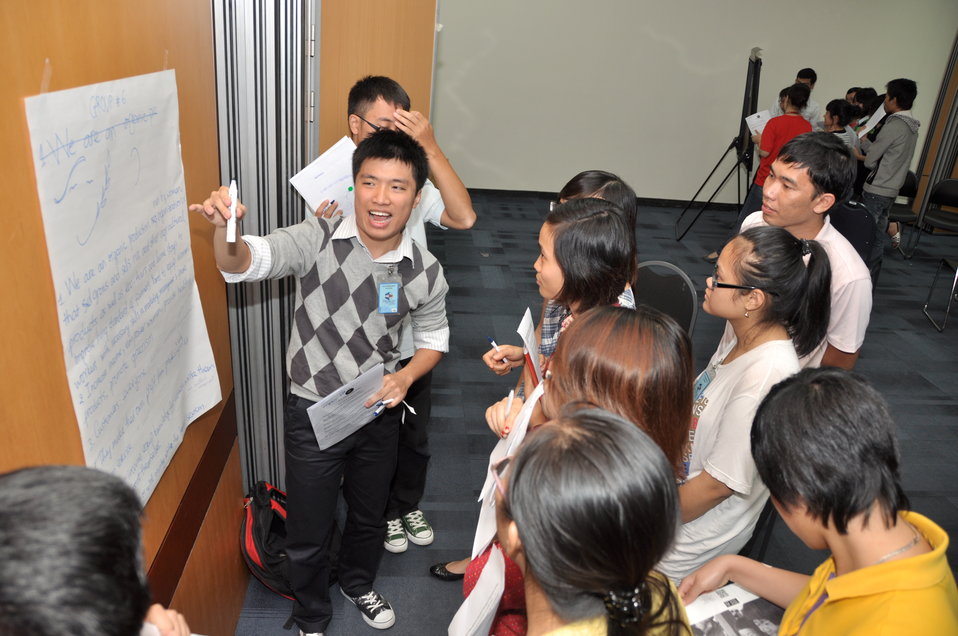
Vietnamese university students join the Business Plan Mashup exercise

Photo: @USAIDVietnam, November 16, 2012